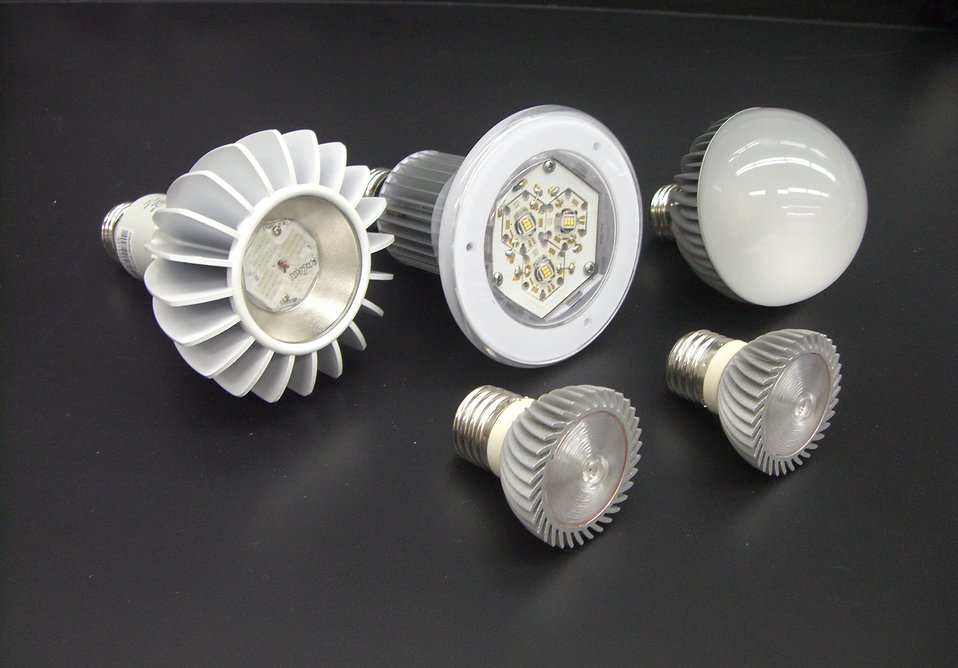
LED Lighting

These solid-state lights are powered by energy-efficient light emitting diodes and are among the first ones of a new generation expected to cut energy needed for lighting by 50 percent by 2027.